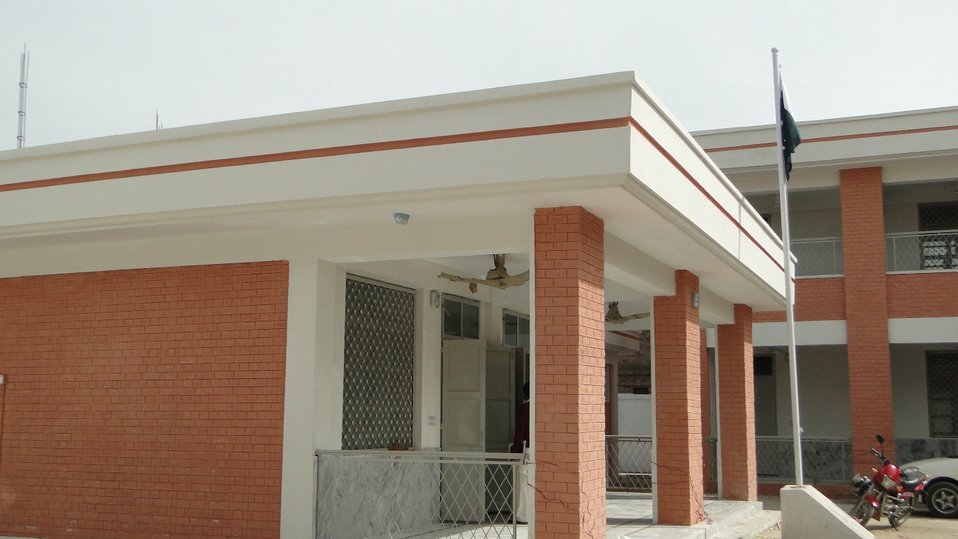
Buner School

Peshawar, March 14, 2012 - The Provincial Reconstruction, Rehabilitation and Settlement Authority (PaRRSA) handed over today to the KP Education Department the first of the 122 U.S. Government-sponsored schools at Torwarsak, Buner.